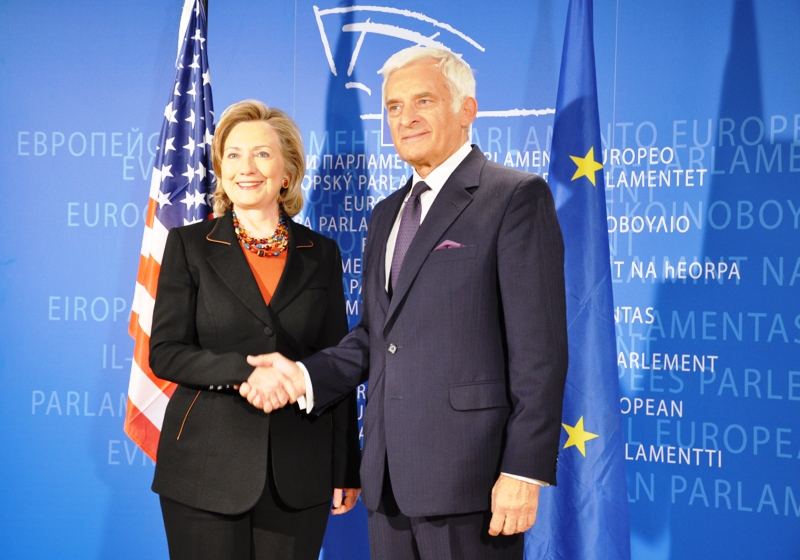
Secretary Clinton Meets With European Parliament President Buzek

U.S. Secretary of State Hillary Rodham Clinton meets with President of the European Parliament Jerzy Buzek in the European Parliament building in Brussels, Belgium, on October 14, 2010.